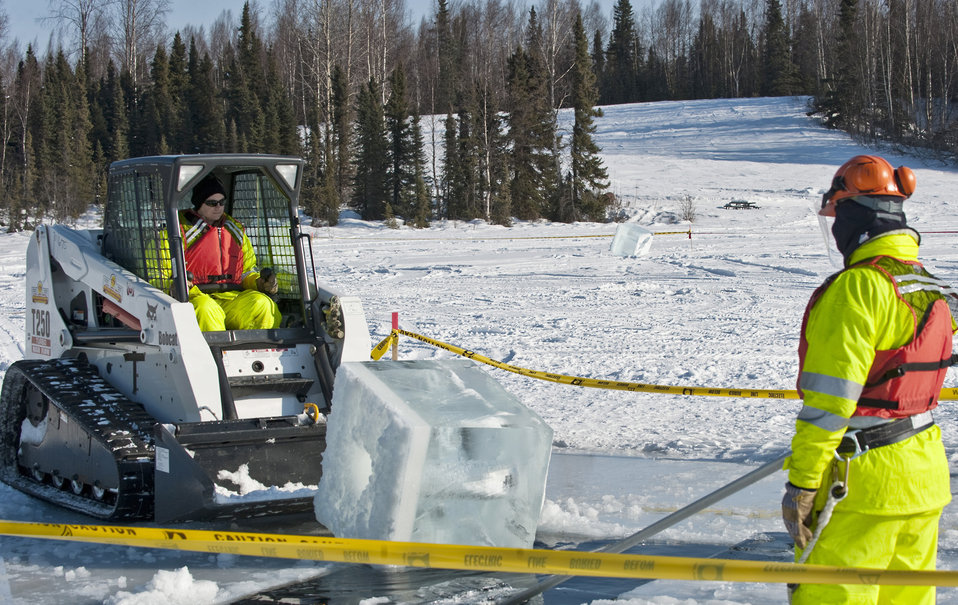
Preparing for oil spills in the arctic

JOINT BASE ELMENDORF-RICHARDSON, Alaska ? Tech. Sgt. Andrew Perrin, 611th Civil Engineer Squadron, looks on as Tech. Sgt. Lucas Clark, 611th CES, uses a Bobcat to push a block of ice back into the water March 1 at JBER?s Six-Mile Lake during the annual Ice Operations Exercise. Approximately a combined 60 members from the 611th CES, U.S. Coast Guard, the Navy?s Supervisor of Salvage, Alaska Department of Environmental Conservation and the Alaska Chadux Corporation participated in the annual exercise, where participants practice various oil spill clean-up drills in preparation if there was ever an event here in Alaska.